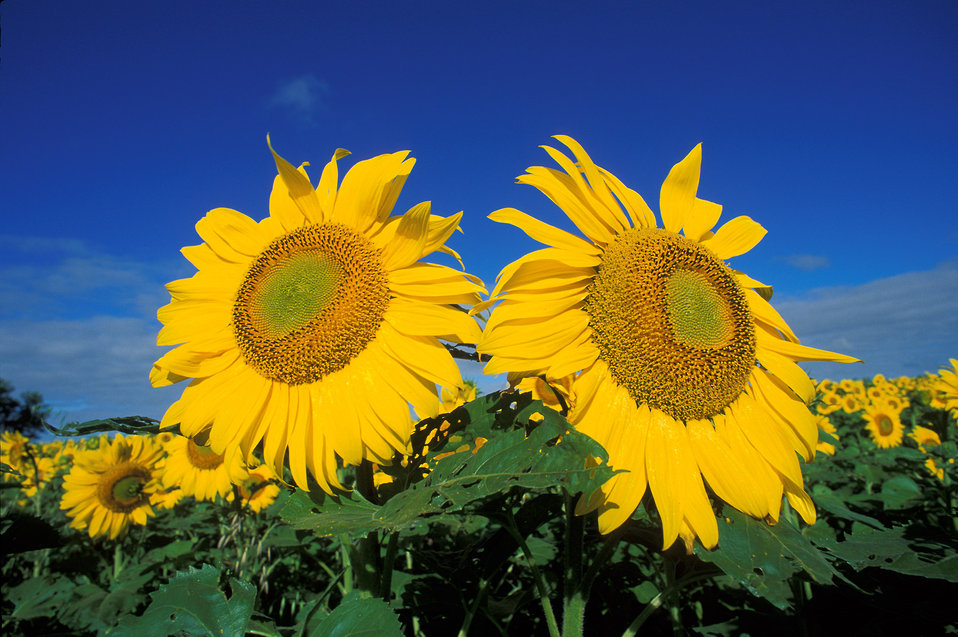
Sunflowers grow in field in Fargo, ND.